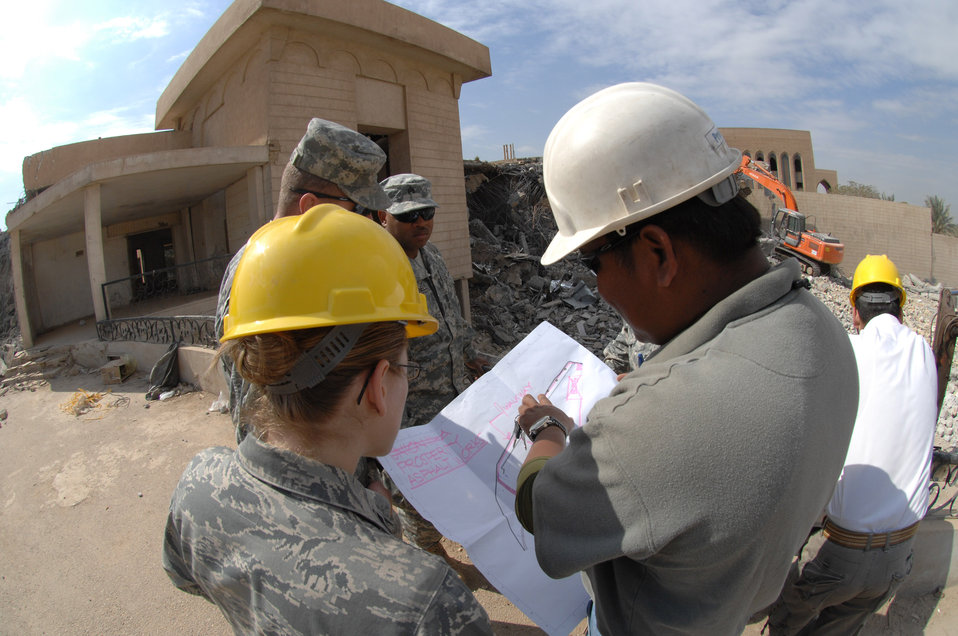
Airman helps Iraqis bury past, rebuild future

Capt. Michelle Sterling goes over the demolition plans with her team members while one of the three villas once belonging to Ba'ath party members is being demolished in March in Iraq. The villas are now being demolished to make room for a new foreign embassy. Captain Sterling is the Joint Area Support Group-Central project payment officer.